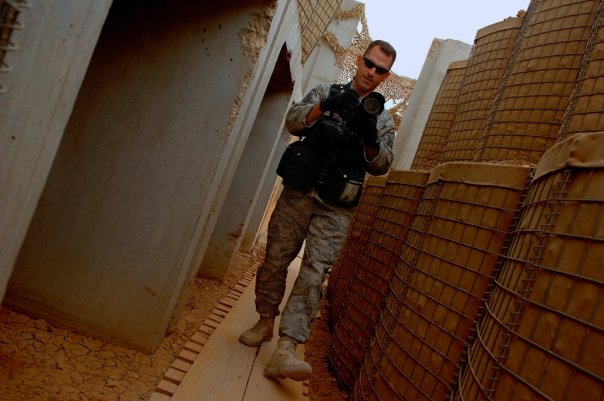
Air Force combat camera team discusses role of media in military

Master Sgt. Andy Dunaway, shown here documenting events in Iraq in 2006, is an aerial combat photojournalist assigned to the 1st Combat Camera Squadron from Charleston Air Force Base, S.C.